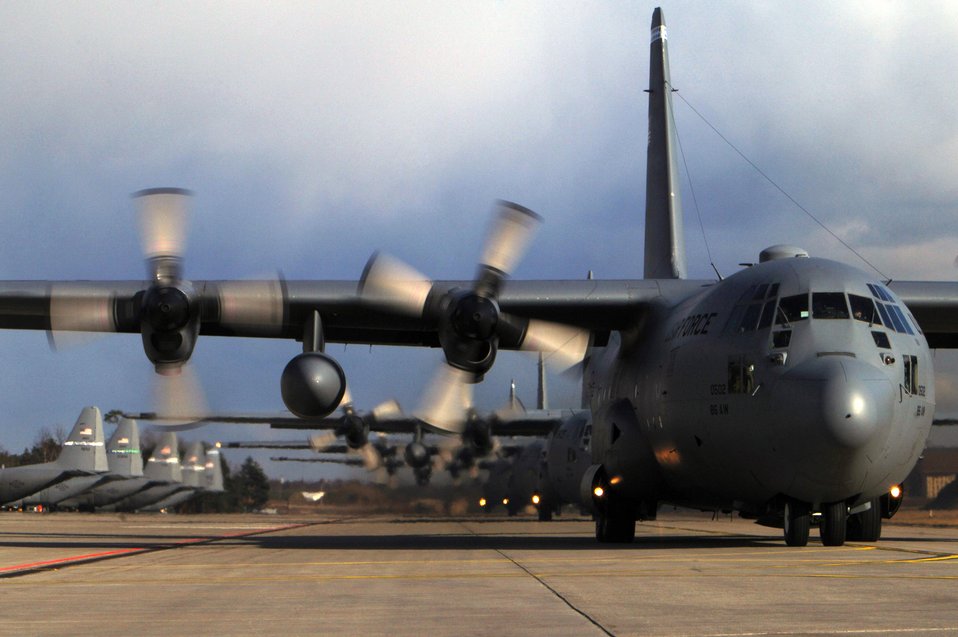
Herks take to the sky

A line of C-130 Hercules aircraft prepare to depart Ramstein Air Base, Germany, March 5 for mass tactical training. The training allows 86th Airlift Wing aircrews to maintain proficiency in large formation flying and airdrop operations.